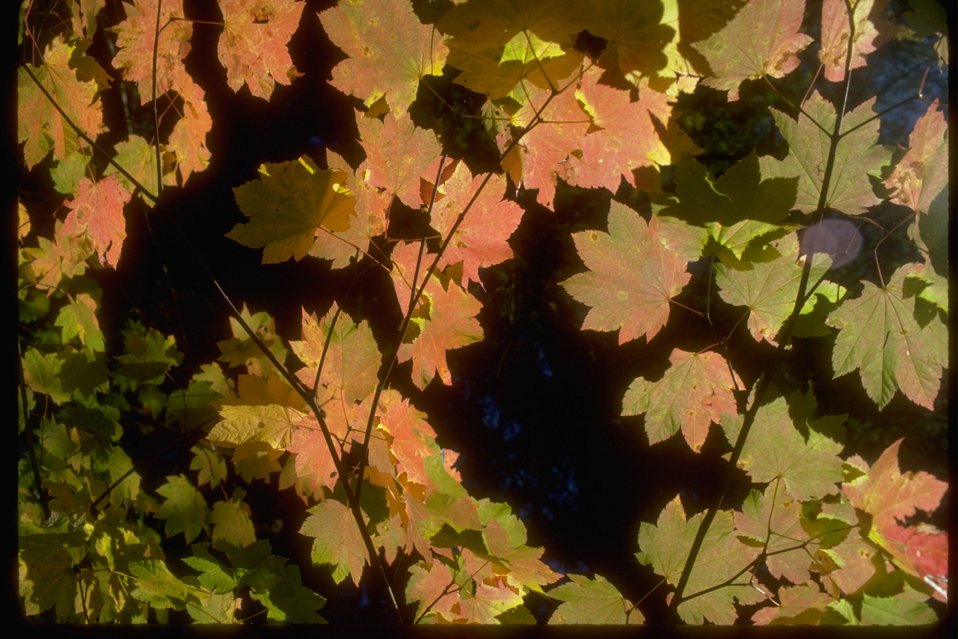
Vine Maple